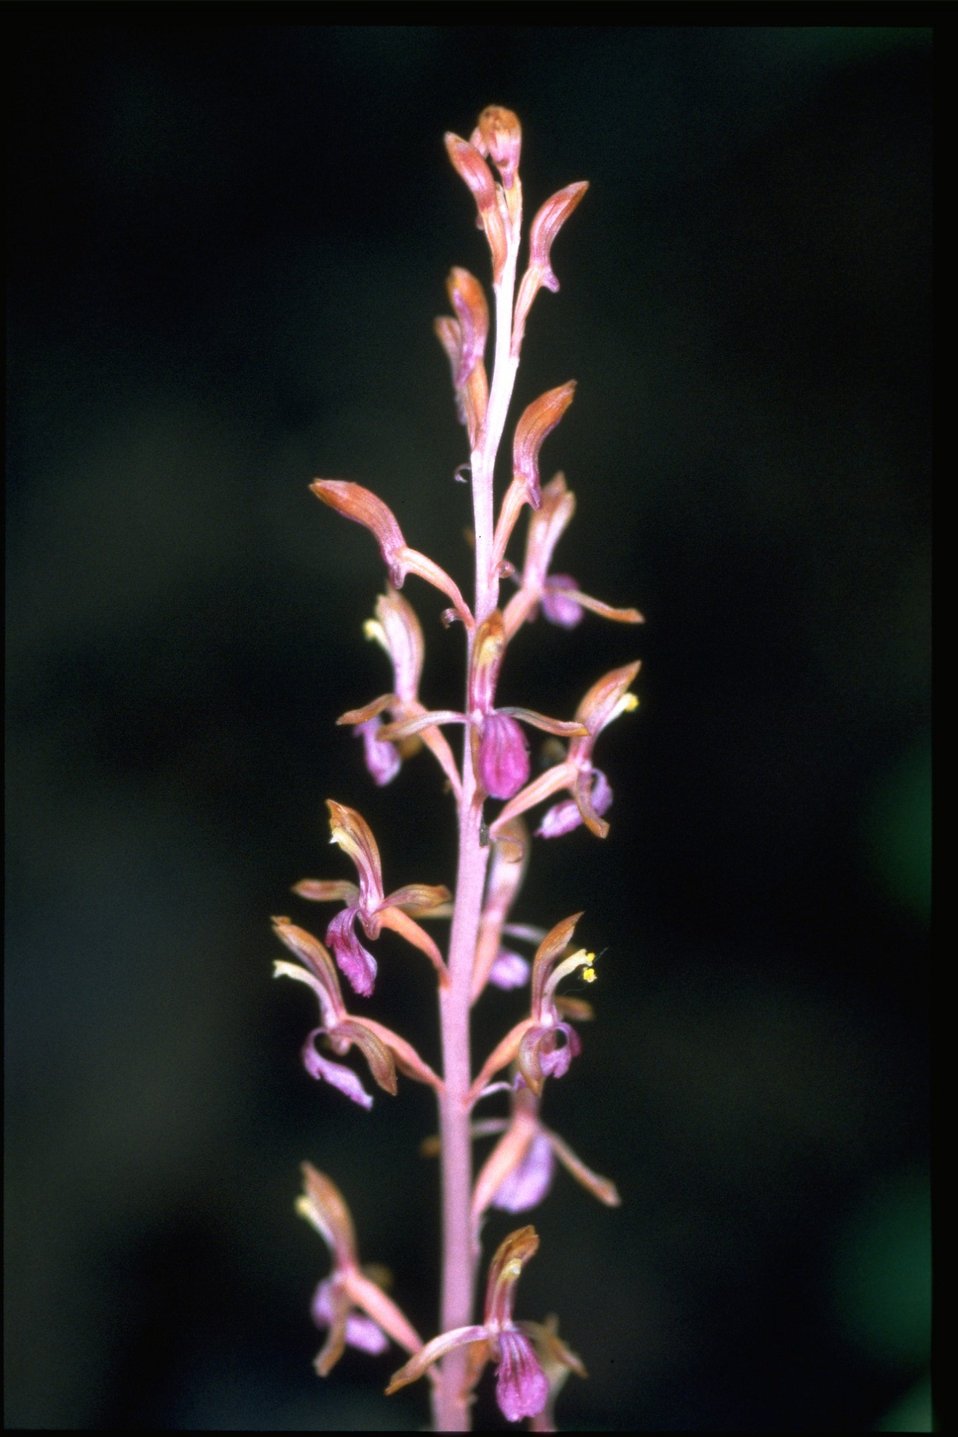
Closeup shot of Corallorhiza maculata.